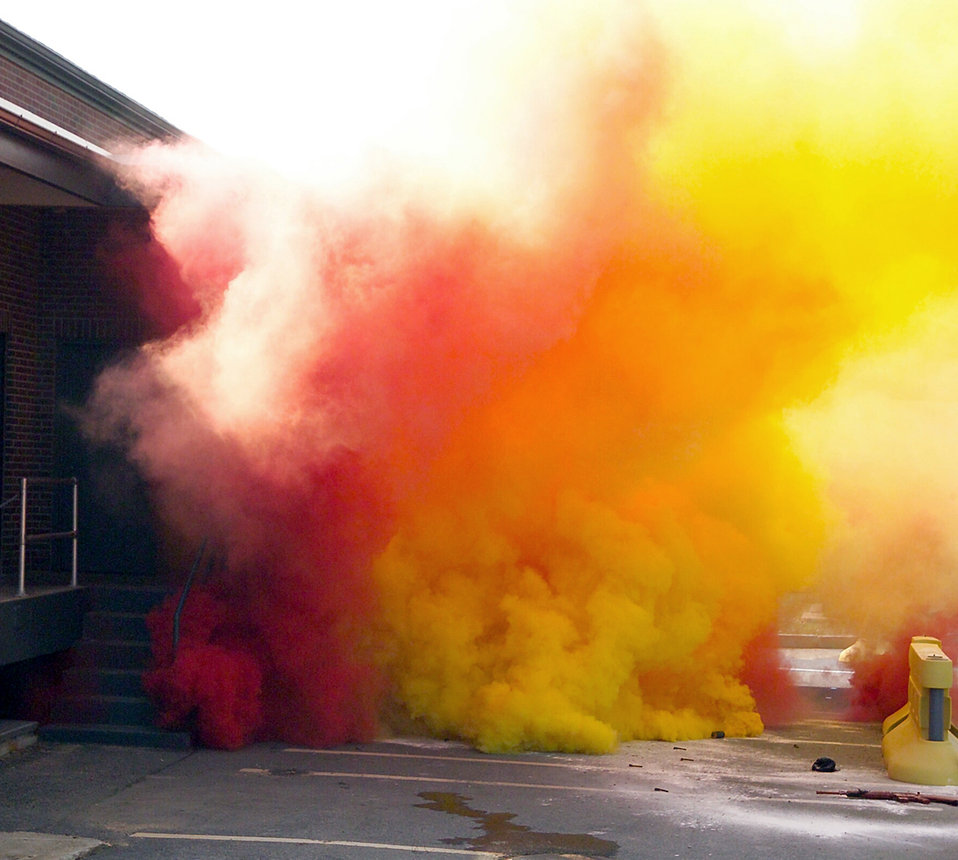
Granite Thunder 2004

NEW BOSTON AIR FORCE STATION, N.H. -- A simulated terrorist attack begins here May 15 during exercise Granite Thunder 2004. The exercise encompassed more than 20 local, state and federal agencies to respond to the attack that combined explosives with chemical agents. The attack was simulated using red and yellow smoke grenades, along with ground burst simulators.